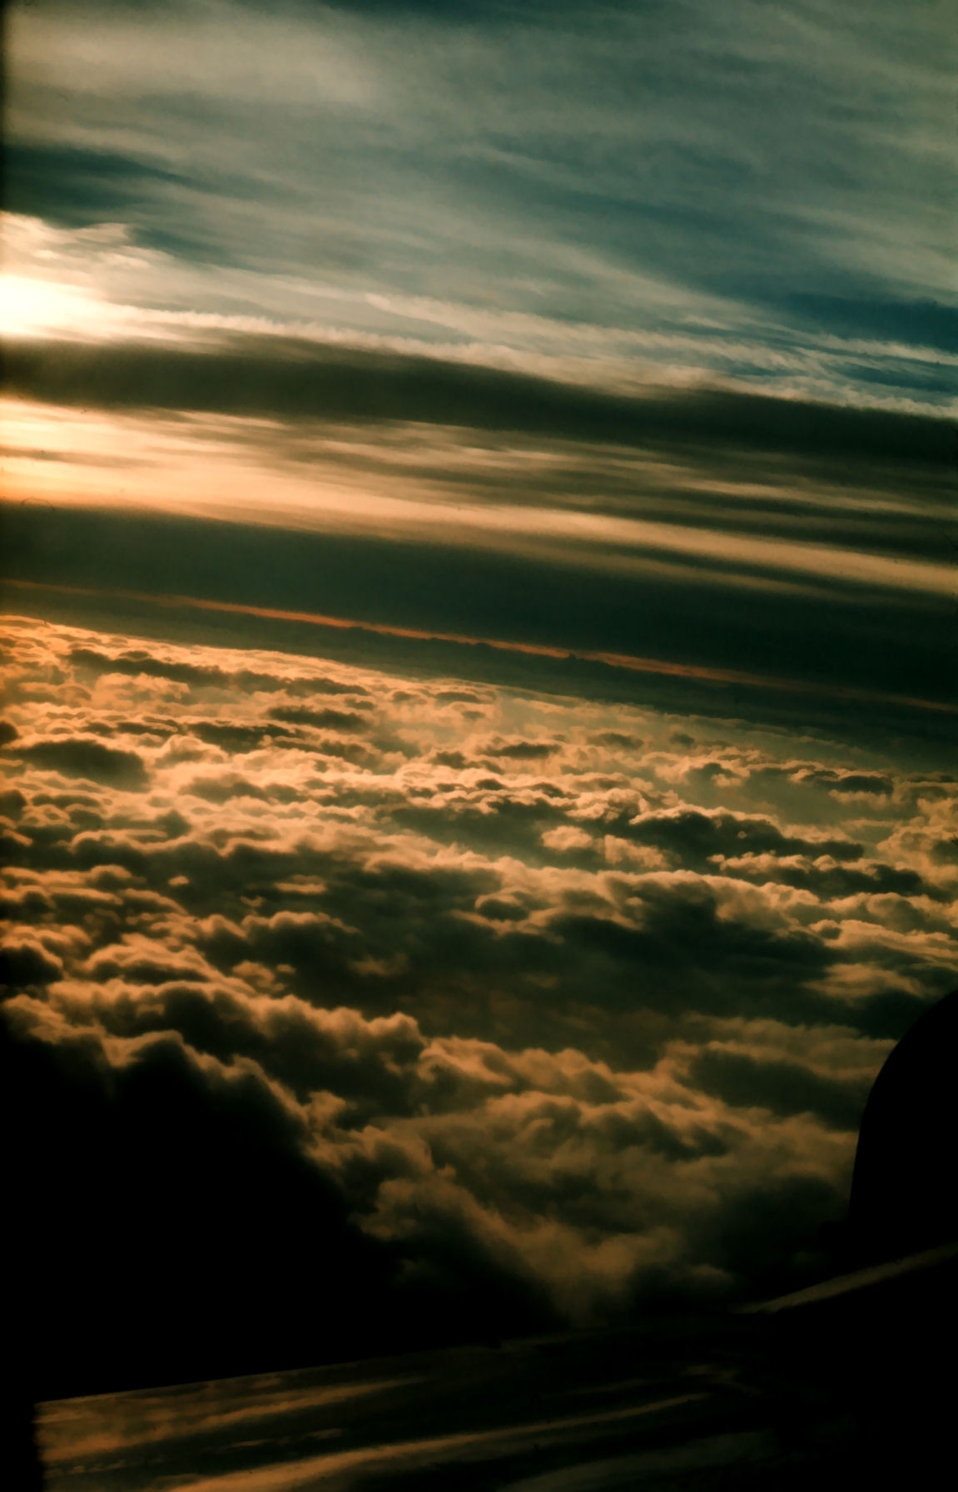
Above the stratocumulus looking at multi-layers of clouds